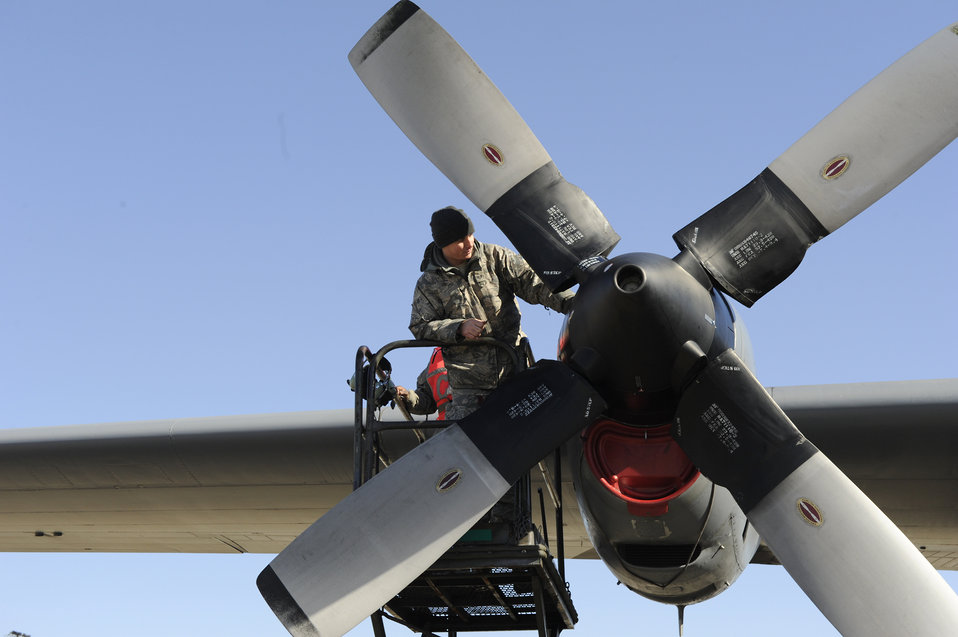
Looking for trouble

Staff Sgt. Scott Grgurich troubleshoots a C-130 Hercules engine problem Feb. 9, 2011 during an exercise at Pope Air Force Base, N.C. Sergeant Grgurich is a C-130 maintainer assigned to 43rd Aircraft Maintenance Squadron.